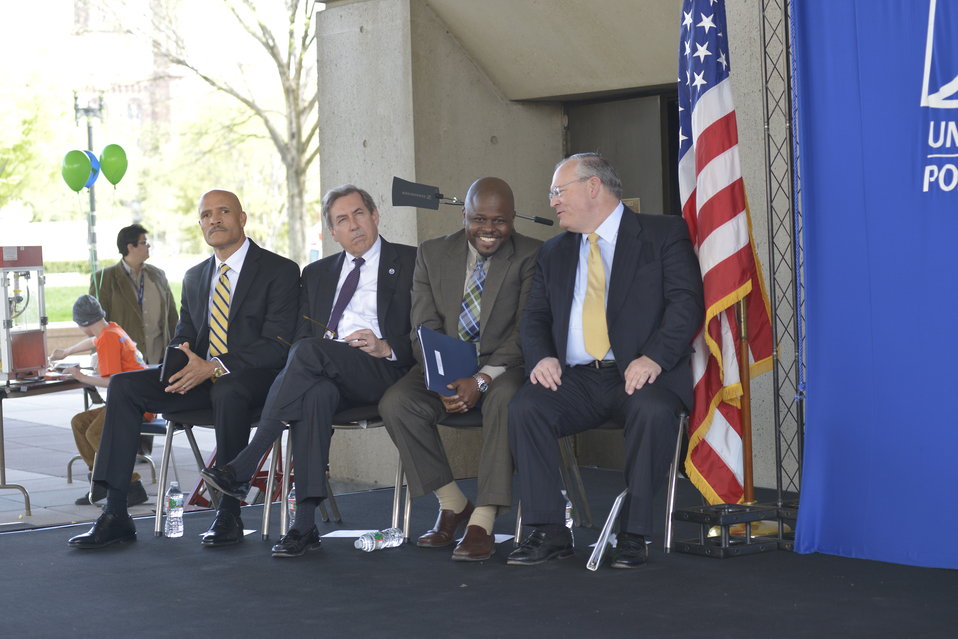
U.S Postal Services introduces a new Global: Sea Surface temperatures forever stamp at the Earth Day program at Department of Energy on April 22, 2014. ( T.Day, C.Williams, C.Anderson II, J.Colin Ph.D, Dr. K. Sullivan, K.Tobin Ph.D, W. Gicher Jr)